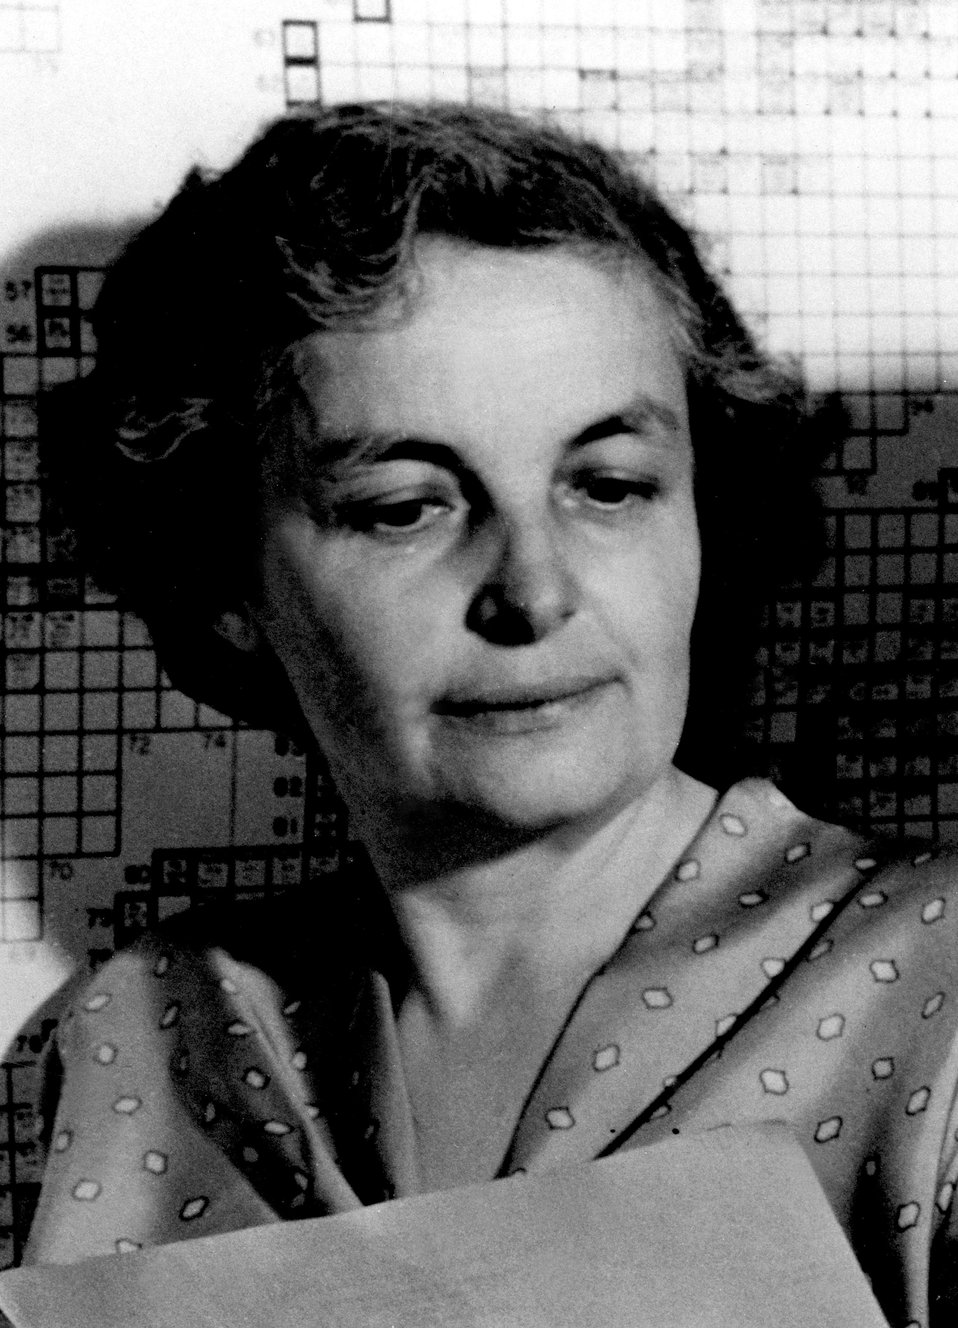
Laura Fermi.